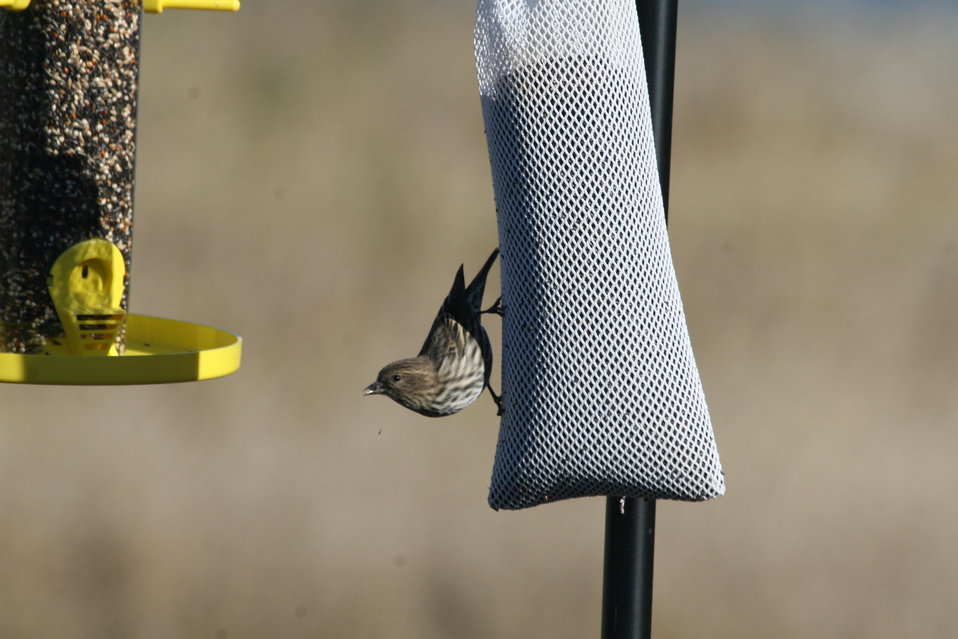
Who's at the bird feeder? - Pine Siskin

This pine siskin has found the new bird feeding station next to Refuge headquarters.